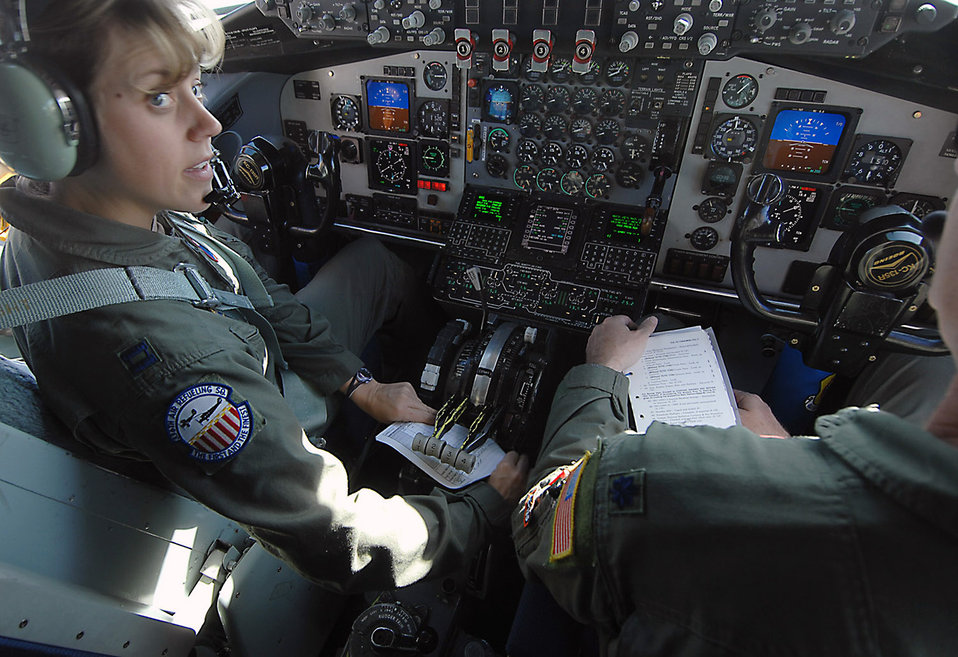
Lights, camera, Air Force Week

Capt. Kimberly Link preflight checks a KC-135 Stratotanker prior to a media flight for Air Force Week Los Angeles Nov. 12 at March Air Reserve Base, Calif. Captain Link is a pilot from the 336th Air Refueling Squadron.